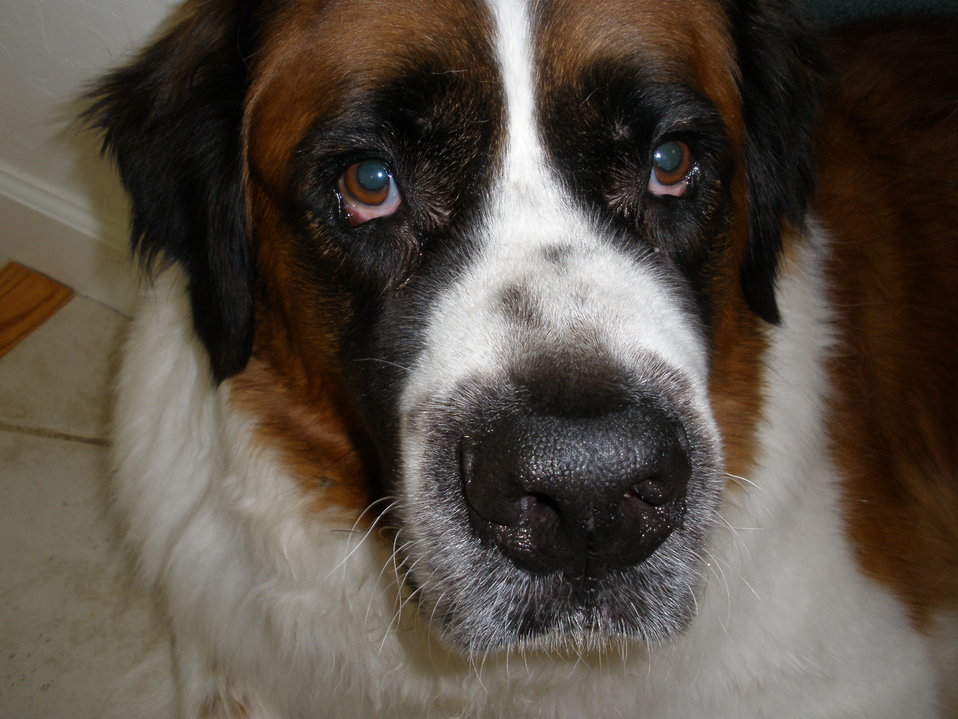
A dog belonging to Joe named Jamestown.